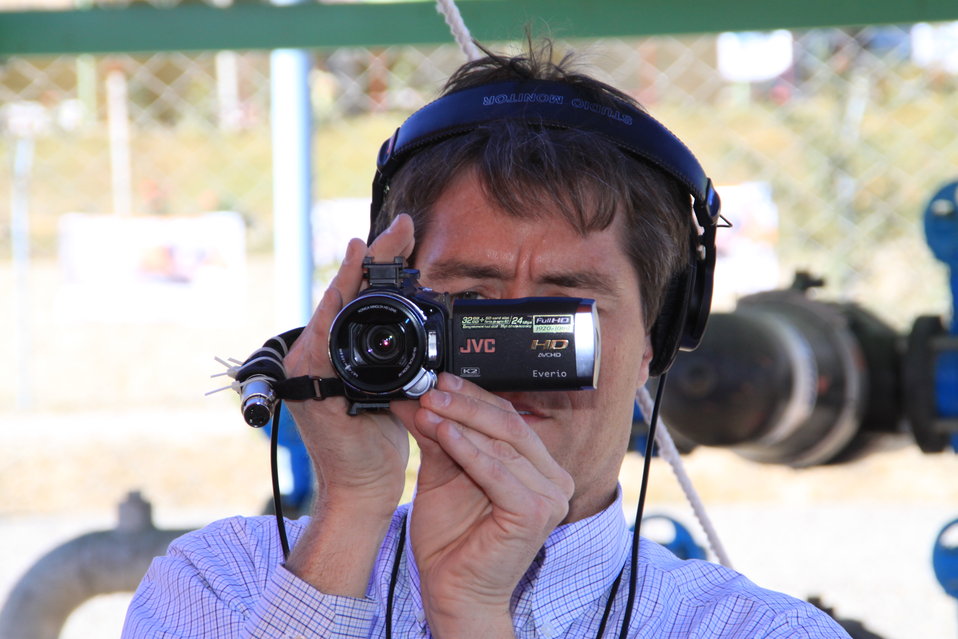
AVIPA Plus Wheat Seed Distribution 101005

US Ambassador Karl Eikenberry and USAID Acting Mission Director Kevin Brownawell joined the Minister of Agriculture, Irrigation and Livestock, H.E. Minister Mohammed Rahimi in signing a Memorandum of Understanding and distributing vouchers to area farmers for wheat and fertilizer.